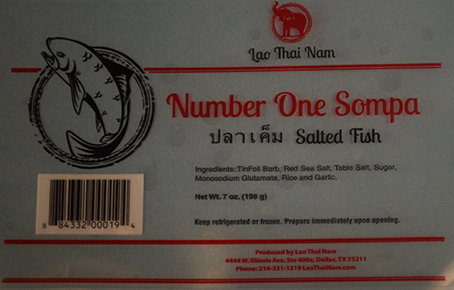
RECALLED – Salted fish

March 31, 2014 – Product Recall – Lao Thai Nam Corp. Voluntarily Recalls Number One Sompa Salted Fish, Because of Possible Health Risk.